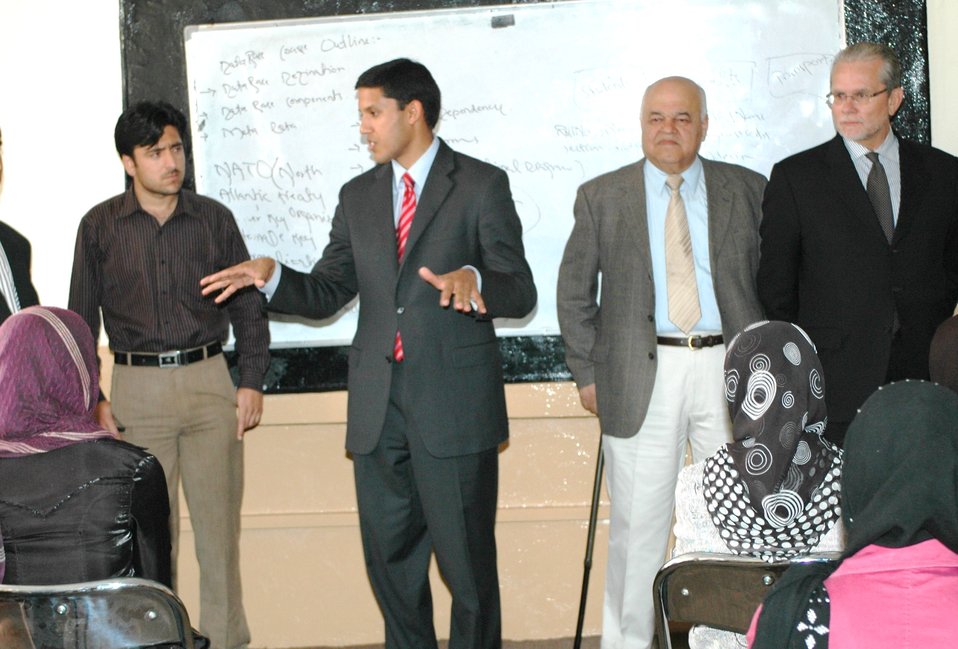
Dr Shah Visits Votech in Kabul